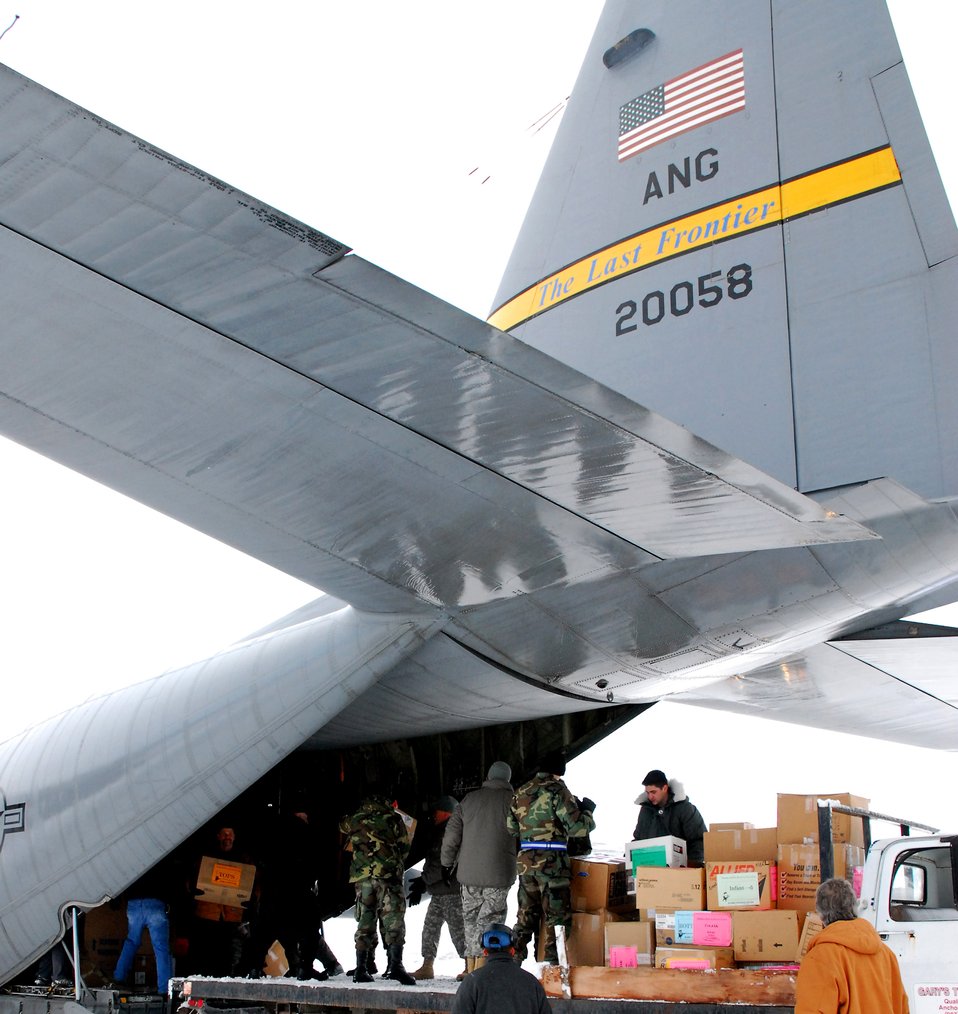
Alaska Guard conducts Operation Santa Claus

Alaska National Guard Soldiers and Airmen join other volunteers in unloading gifts and goodies off the back of a C-130 Hercules during Operation Santa Claus Nov. 13 in Togiak, Alaska. Alaska National Guard members are bringing Christmas early to children in remote Alaskan villages.